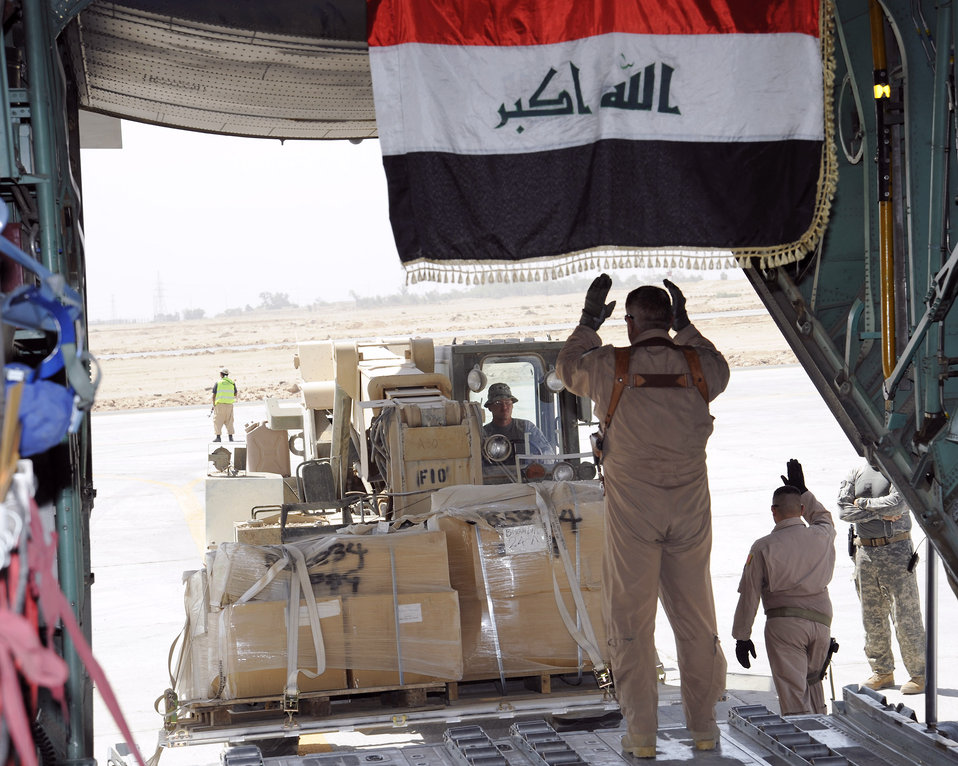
Iraqi relief

An Iraq air force loadmaster guides a forklift away from a C-130 Sept. 22 at an air base in Iraq. The Iraqis are off loading pallets of donated supplies for internally displaced families at Camp Al-Manathera. The supplies consist of childrens clothes, winter coats, shoes, burn medicine and wheelchairs.